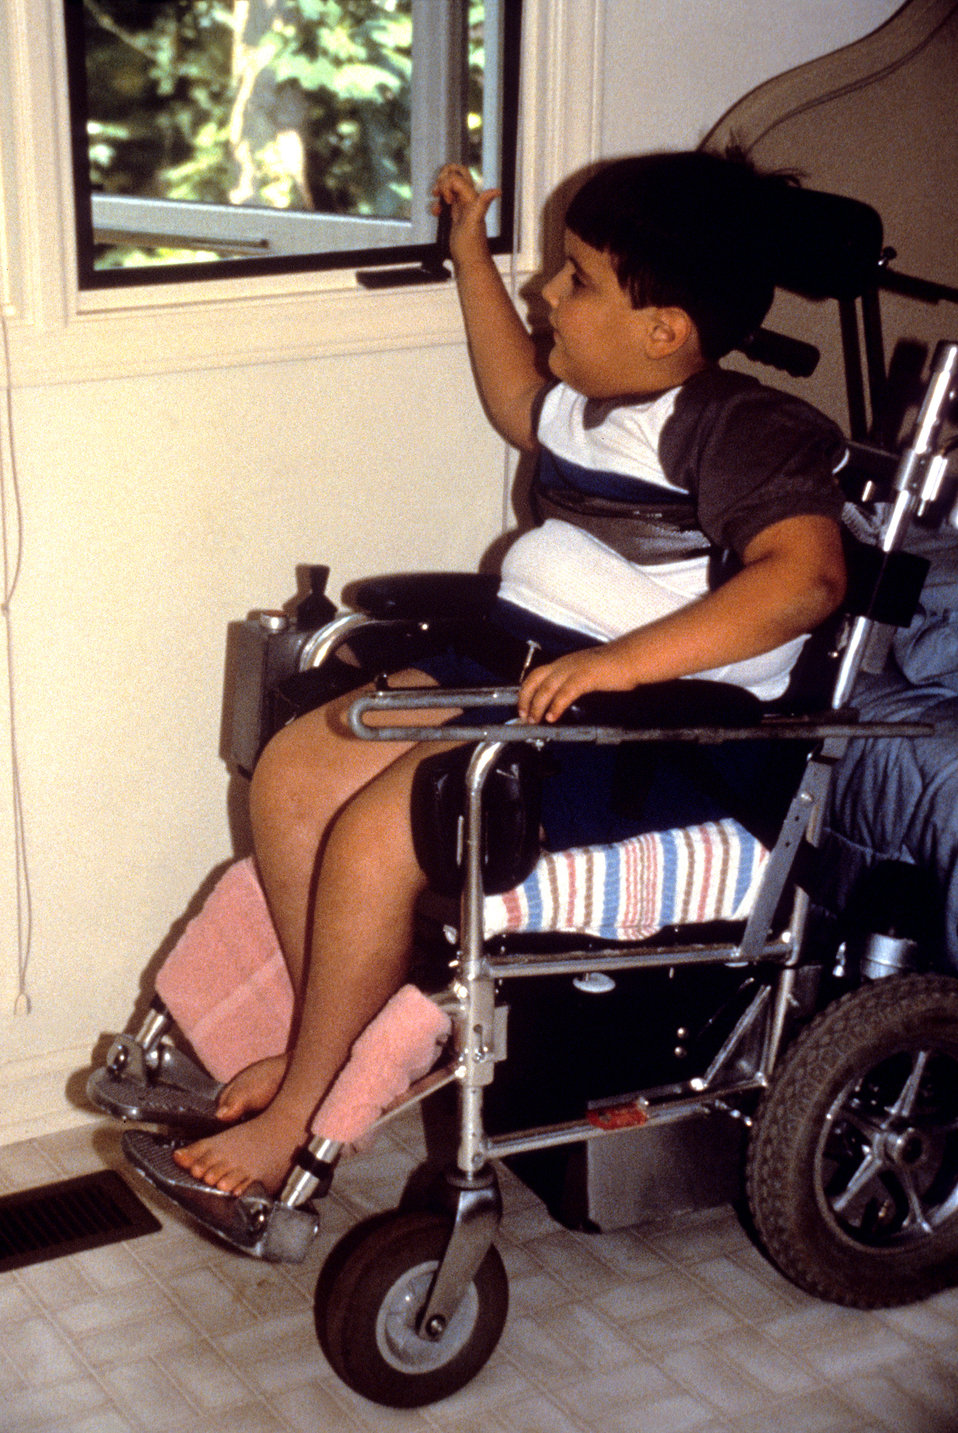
In this 1995 image, a young child who was seated in a wheelchair was operating a manual hand crank on a casement window. Because the crank was located on the window sill, which was no more then thirty-six inches above floor level, it not only facilitated ease of use for wheelchair-seated individuals, but very short people as well. Single or double hung windows, by comparison, require two hands, considerable force, and a long, high reach-range.